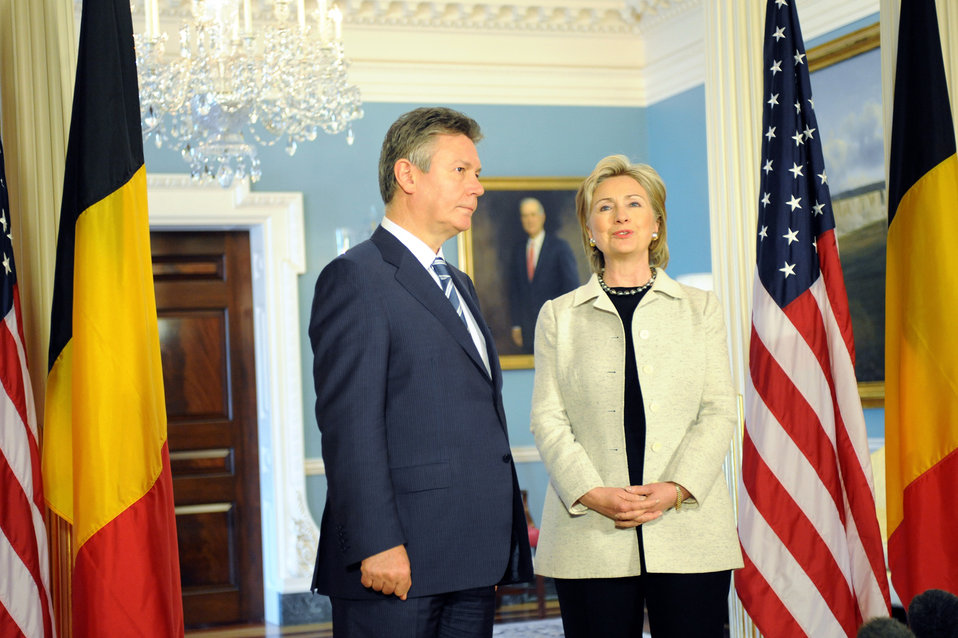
Secretary Clinton Meets With Belgian Prime Minister

U.S. Secretary of State Hillary Rodham Clinton hosts a bilateral meeting with Belgian Deputy Prime Minister Karel De Gucht in the Treaty Room of the U.S. Department of State in Washington, DC May 22, 2009.